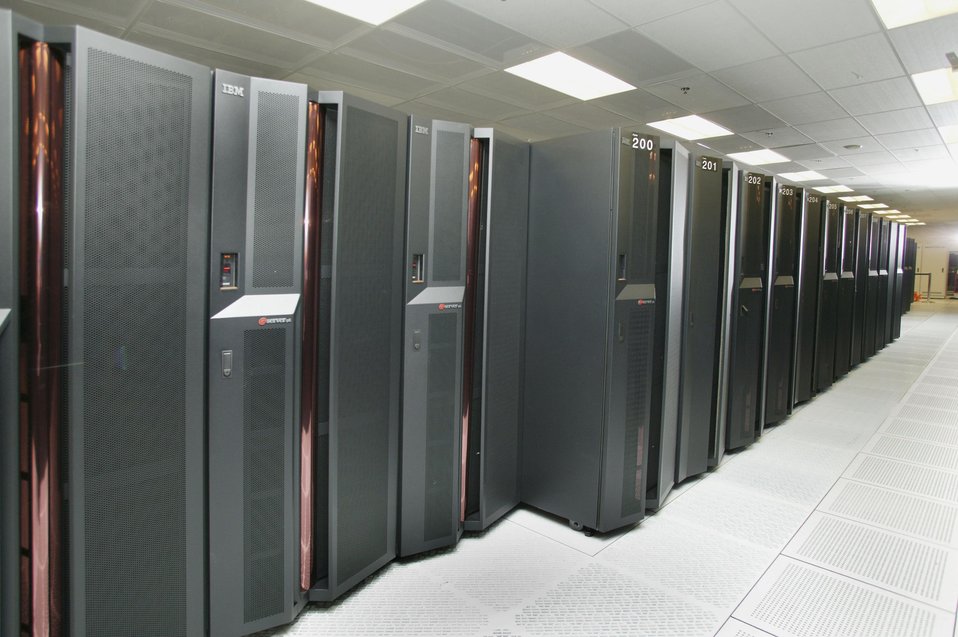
ASC PURPLE SUPERCOMPUTER AT LAWRENCE LIVERMORE NATIONAL LABORATORY.

THE ASC PROGRAM AT LLNL HAS TWO NEW, NEXT GENERATION SUPERCOMPUTERS, BLUEGENE/L AND PURPLE, THAT WILL HELP THE U.S. NUCLEAR WEAPONS PROGRAM STOCKPILE REMAIN SAFE AND RELIABLE WITHOUT NUCLEAR TESTING. BOTH MACHINES ARE LOCATED AT LLNL. THE DATA GATHERED FROM MATERIALS AGING CALCULATION TO BE RUN ON BLUEGENE/L WILL BE VITAL TO THE CREATION OF IMPROVED MODELS TO BE USED FOR FUTURE WEAPONS PERFORMANCE SIMULATION ON PURPLE.